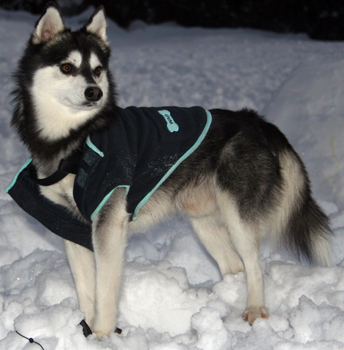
Standard Male Alaskan Klee Kai named Kukai